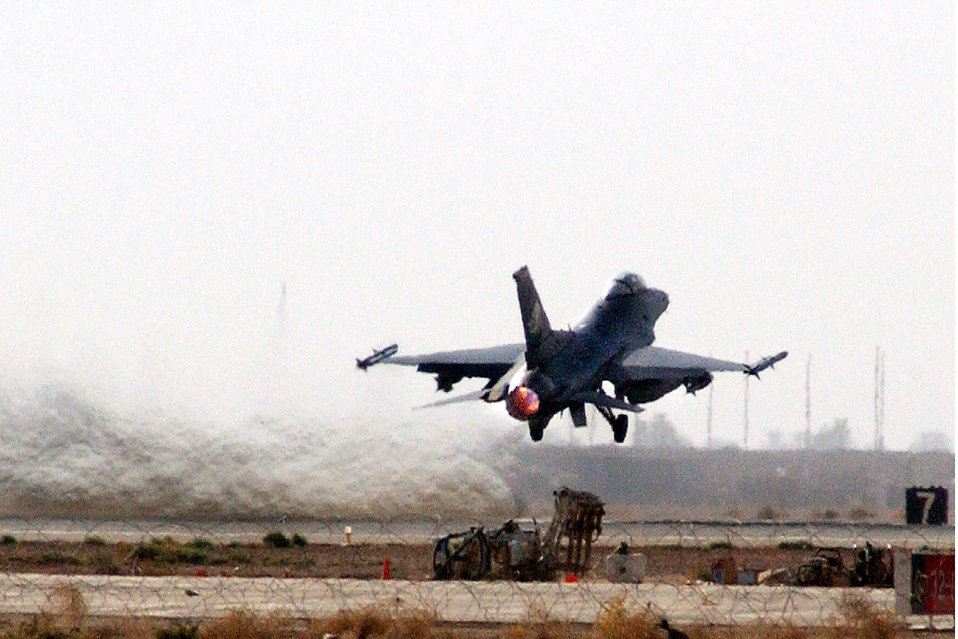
March 20 airpower summary: F-16s bomb enemy targets

An F-16 Fighting Falcon takes off for a combat mission from Balad Air Base, Iraq.